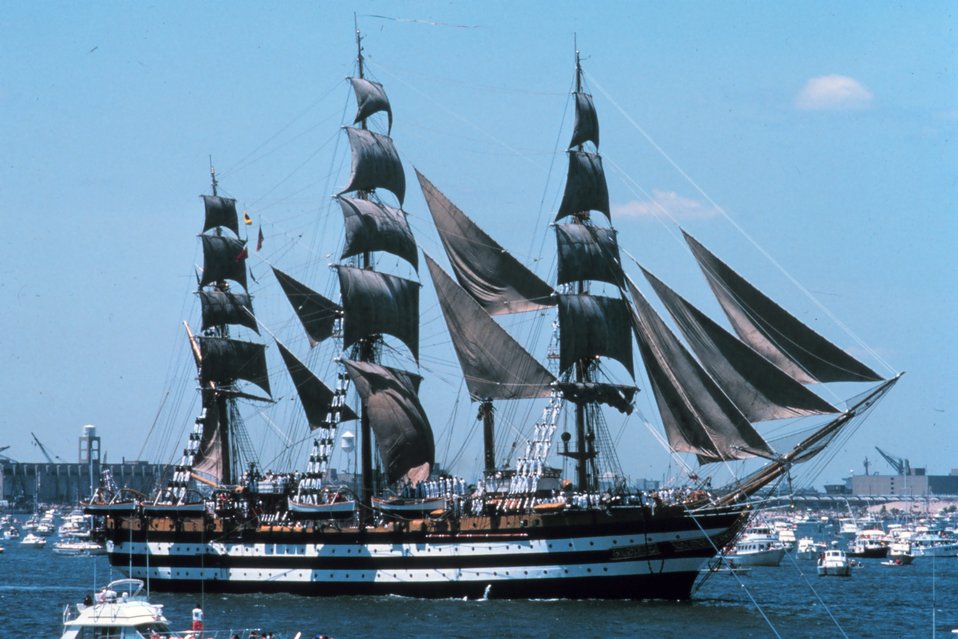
A tall ship in New York Harbor